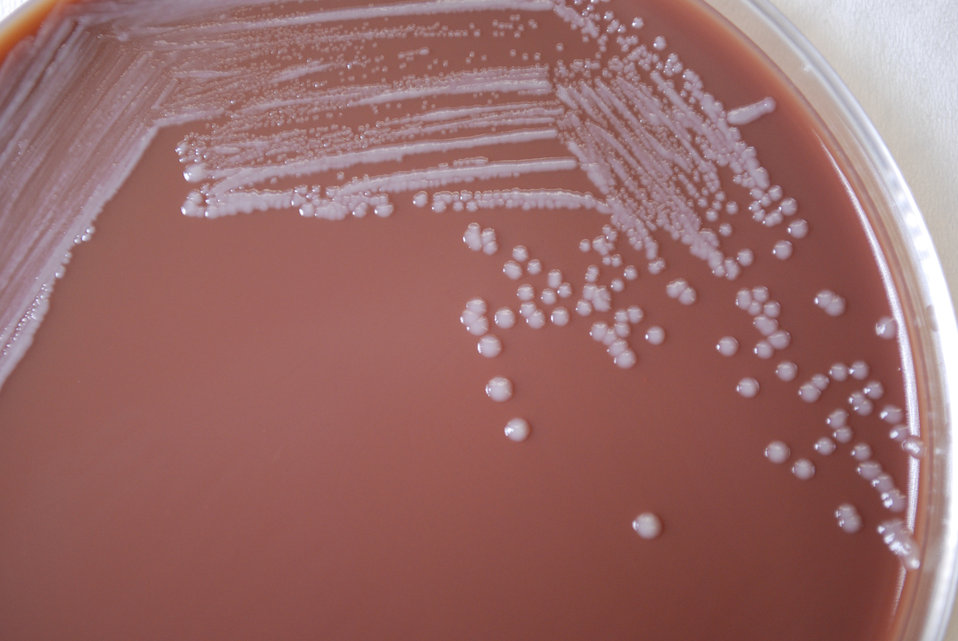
A closer view of PHIL 12267, this photograph depicts the colonial morphology displayed by Gram-negative Yersinia pestis bacteria, which was grown on a medium of chocolate agar, for a 72 hour time period, at room temperature. Y. pestis is the bacterium responsible for causing the infectious disease known as plague.